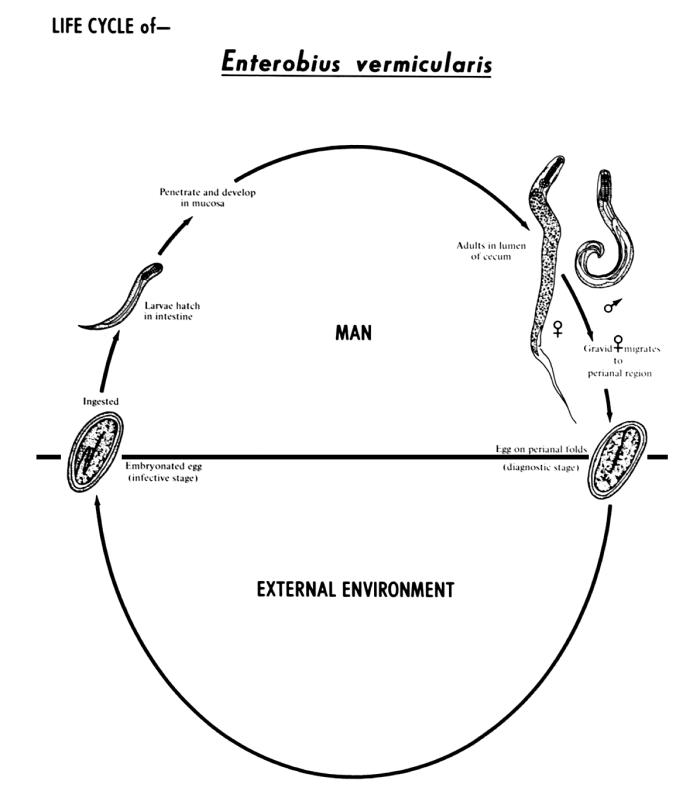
This diagram depicts the various stages in the life cycle of the human pinworm nematode Enterobius vermicularis.